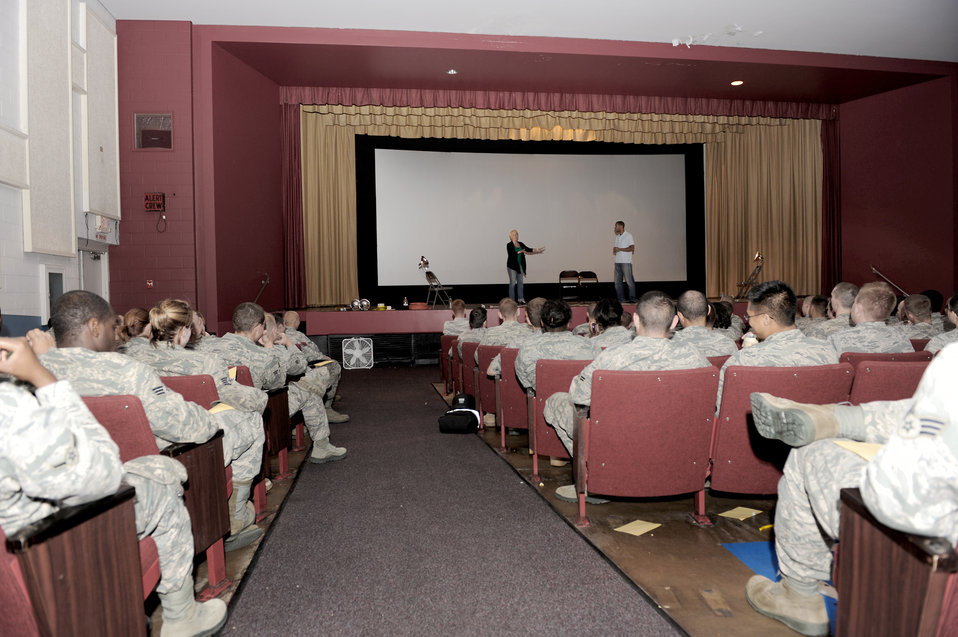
'Sex Signals'

Courtney Abbott and DeRante Parker, an acting group from Chicago, Ill, perform their skit during a